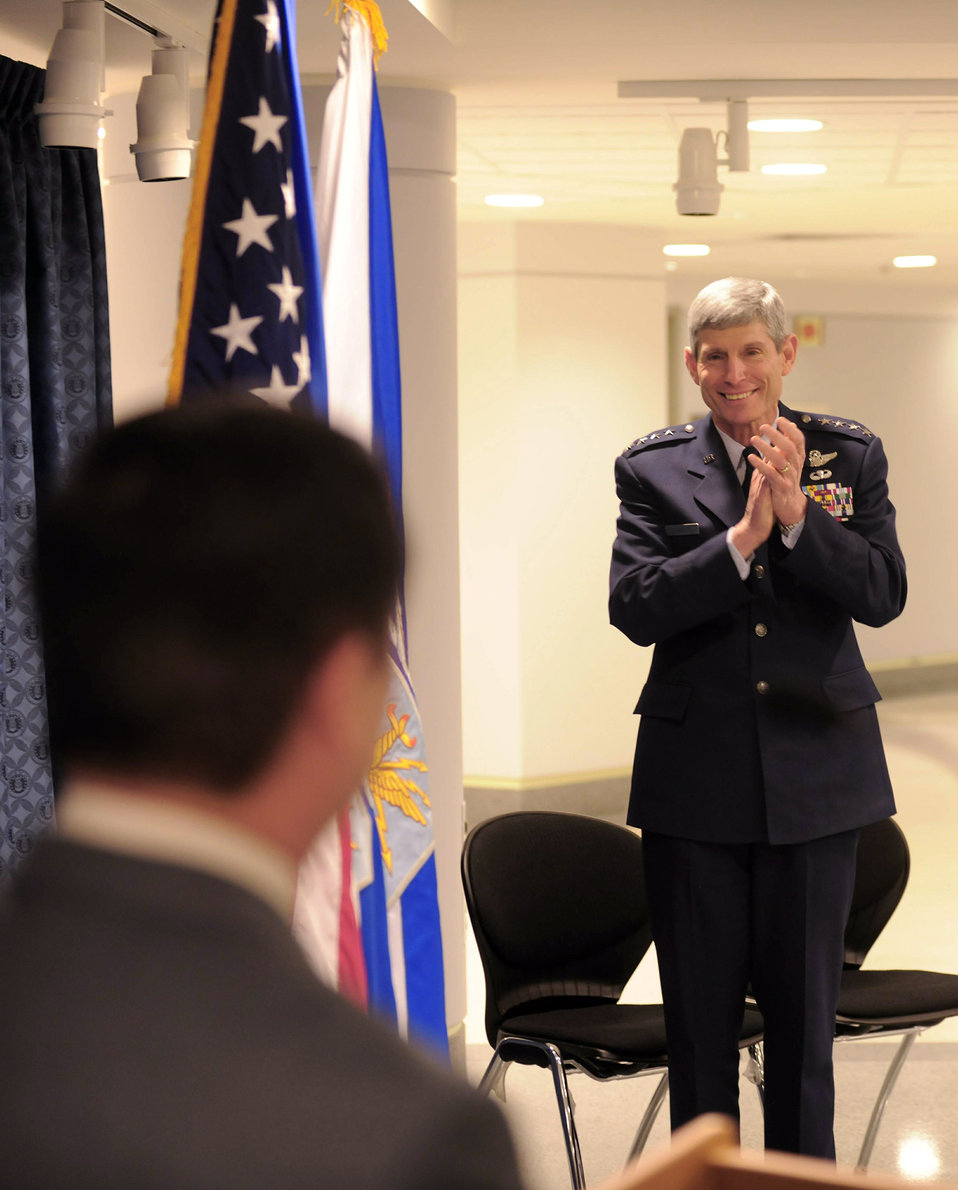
Air Force chief of staff recognizes Hmong-American patriot

Air Force Chief of Staff Gen. Norton Schwartz leads the applause for Yia Kha after he addresses the crowd attending his recognition ceremony March 30, 2010, in the Pentagon. Mr. Kha received a certificate of recognition from the Air Force to acknowledge his seven years of service supporting combat operations in Vietnam. Mr. Kha was a Hmong soldier who trained to be 'Robin', backseat aircrews who supported U.S. forward air controllers.